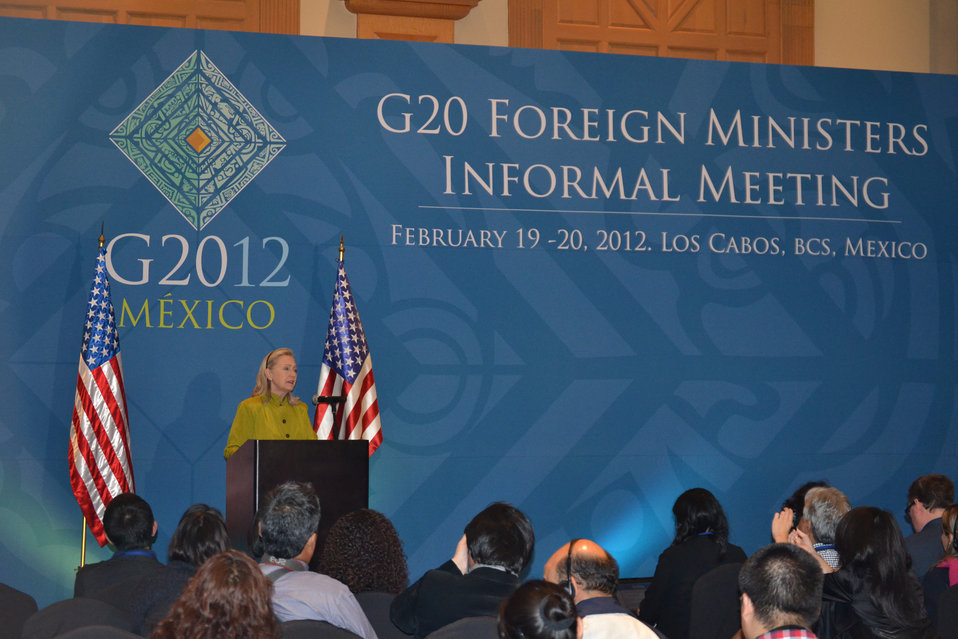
Secretary Clinton Holds Press Availability During G-20 Meeting in Mexico

U.S. Secretary of State Hillary Rodham Clinton holds a press availability during the G-20 Foreign Ministers Informal Meeting in Los Cabos, Mexico, February 20, 2012.